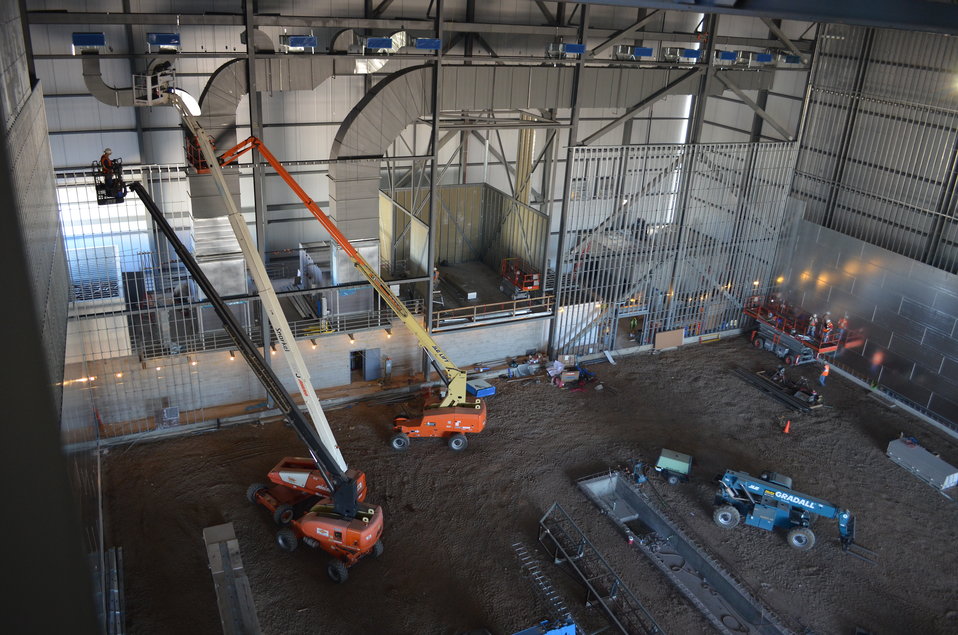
Radar Cross Section Test Facility at Hill Air Force Base

Contractors for the U.S. Army Corps of Engineers Sacramento District work on the testing chamber of the F-22 Radar Cross Section Test Facility at Hill Air Force Base, Utah, June 20, 2012. The 49,827-square-foot facility will used to test the radar signature of the F-22 and other aircraft to ensure that required levels of radar stealth are met.